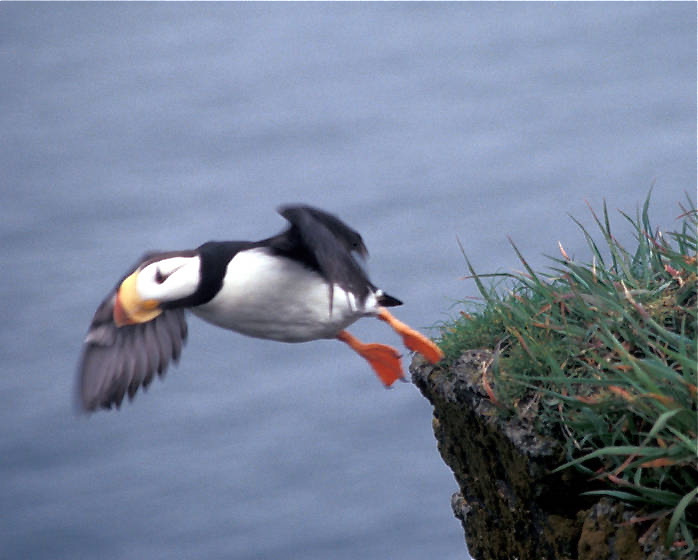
horned puffin

Alaska Maritime National Wildlife Refuge